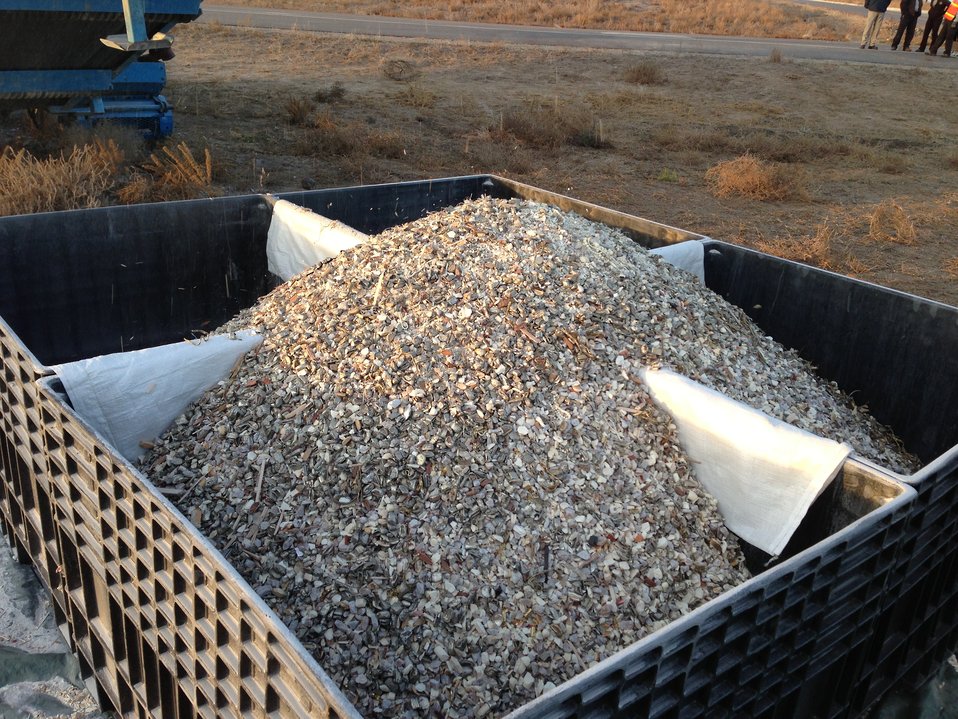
Crushed Ivory